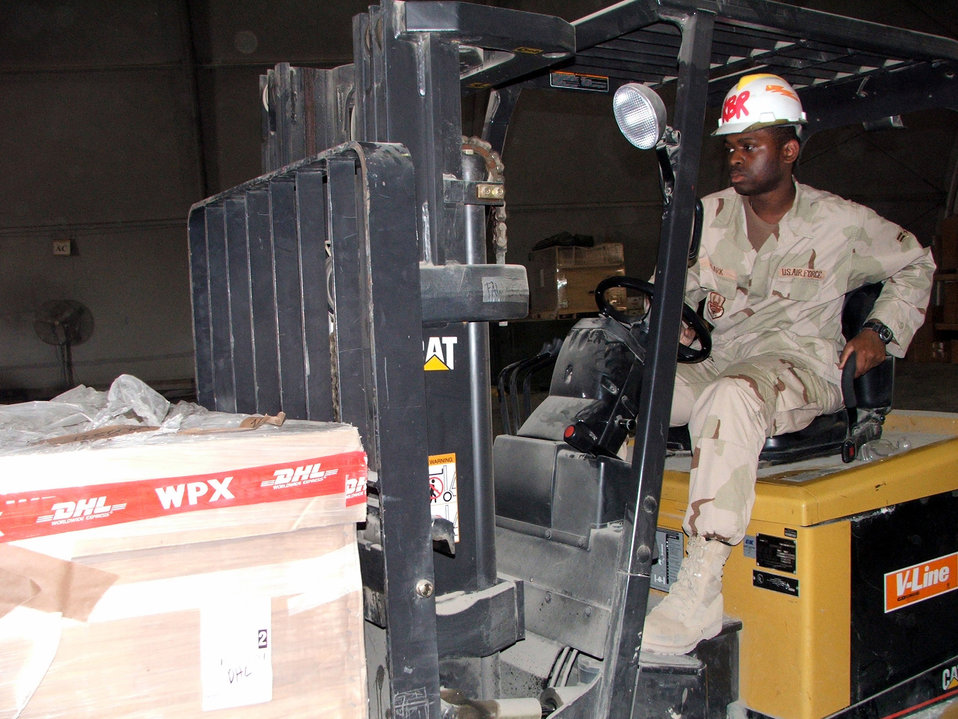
Expeditionary supply technicians order up success

KARSHI-KHANABAD AIR BASE, Uzbekistan -- Airman 1st Class Jerome Clark moves cargo in the supply warehouse here April 26. He is assigned to the 416th Expeditionary Mission Support Squadron's supply section and is deployed from Grand Forks Air Force Base, N.D.